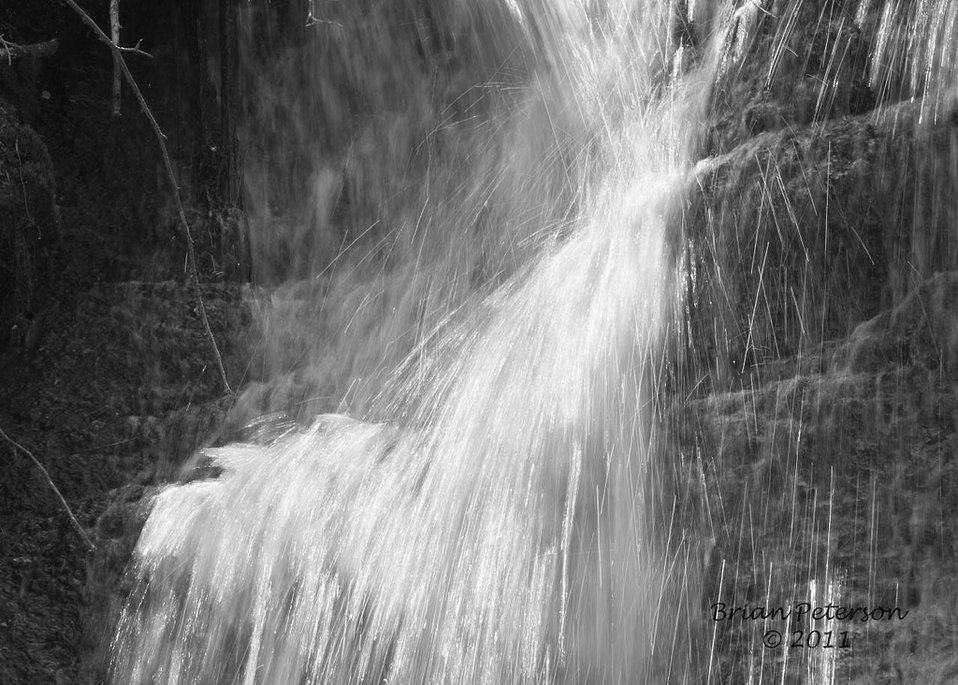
waterfall

Fort Falls, Fort Niobrara National Wildlife Refuge, NE